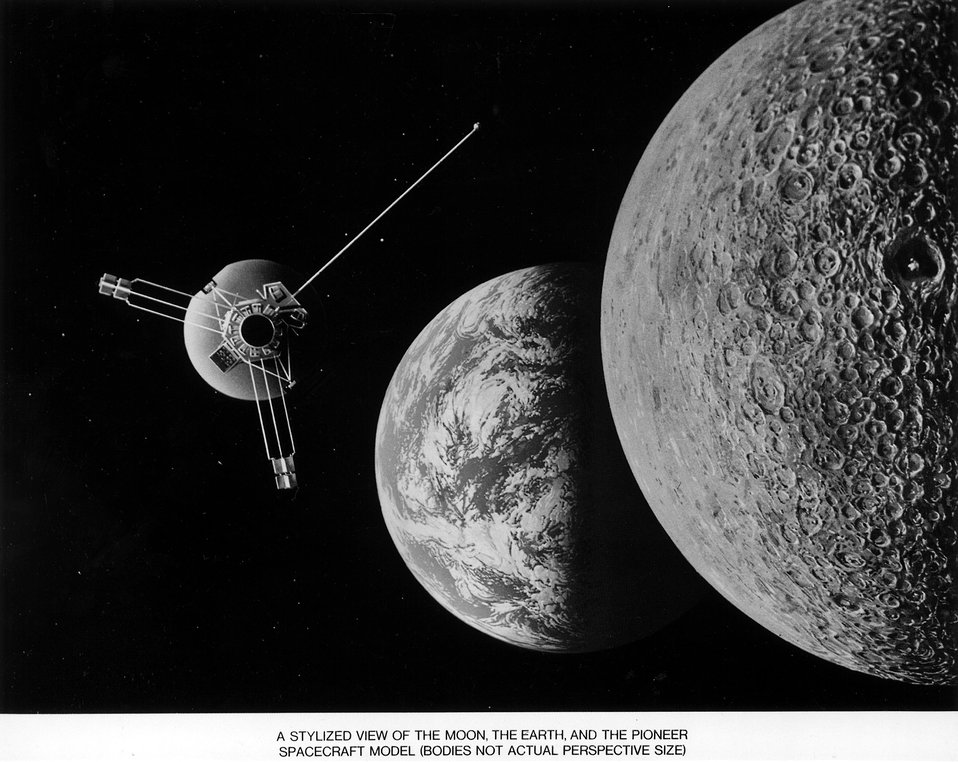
A stylized view of the moon, the earth, and NASA's Pioneer 10 spacecraft model. Circa 1972.